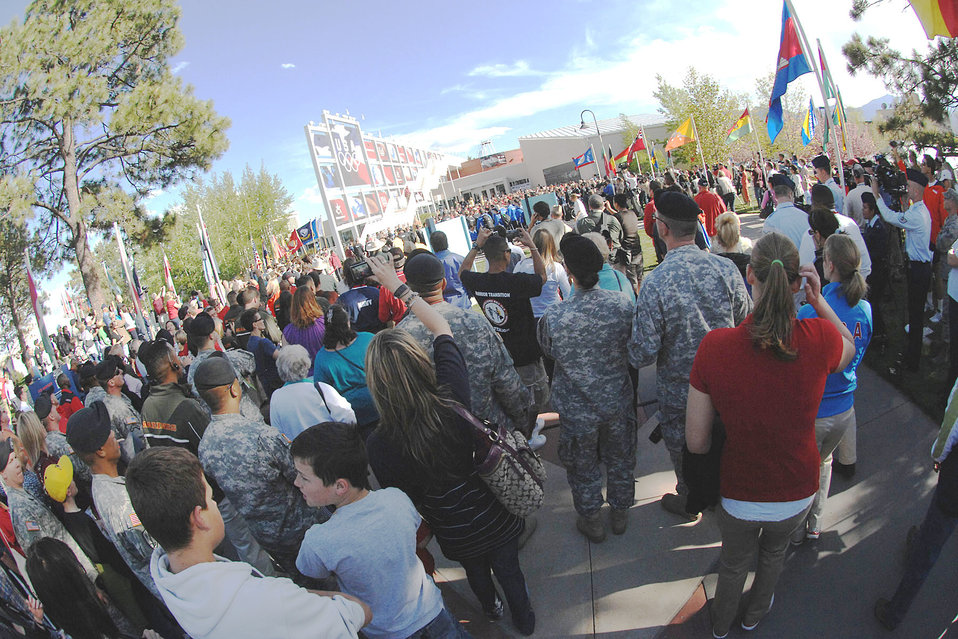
Olympic path marks troops' journeys to fulfilled dreams

Hundreds gather to cheer on the troops gathered for the inaugural Warrior Games May 10, 2010, at the Olympic Training Center in Colorado Springs, Colo.